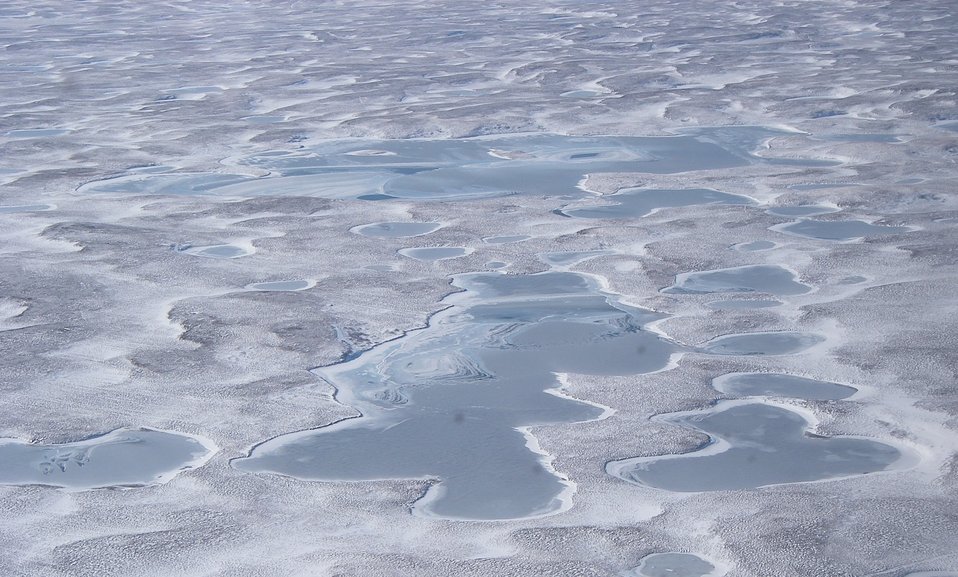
Izembek Wilderness

Wilderness north of Kinzarof Lagoon, Izembek National Wildlife Refuge
Photo by Kristine Sowl,
USFWS, Public Domain